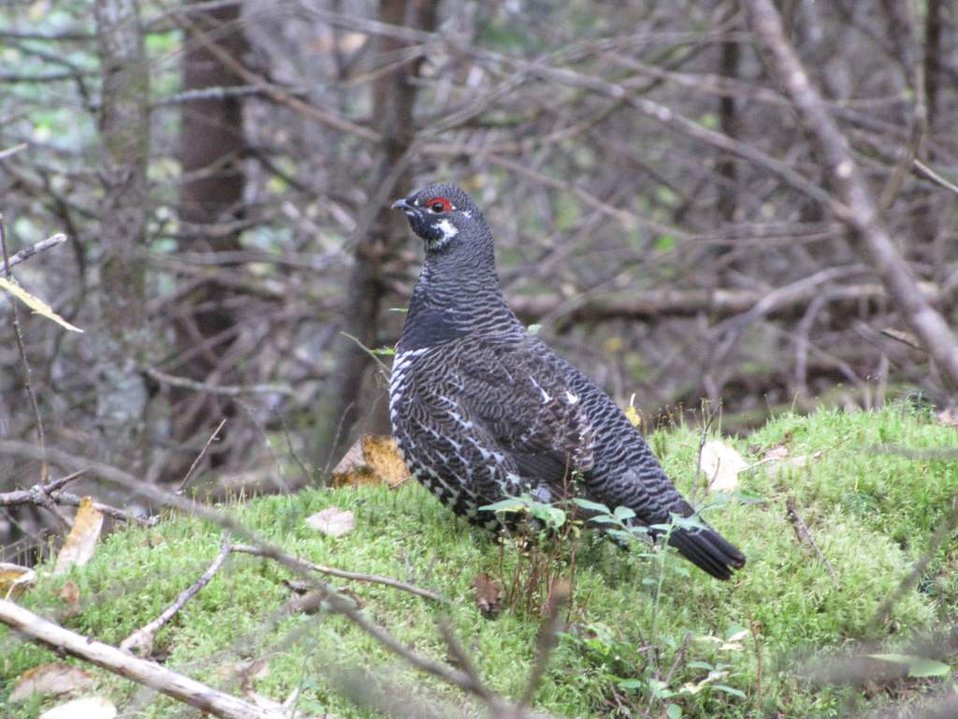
Male spruce grouse at Conte National Fish and Wildlife Refuge

Male spruce grouse at the Nulhegan Basin Division of the Silvio O. Conte National Fish and Wildlife Refuge in Vermont.

Credit: David Govatski/USFWS

www.fws.gov/r5soc/come visit/nulhegan basin division.html